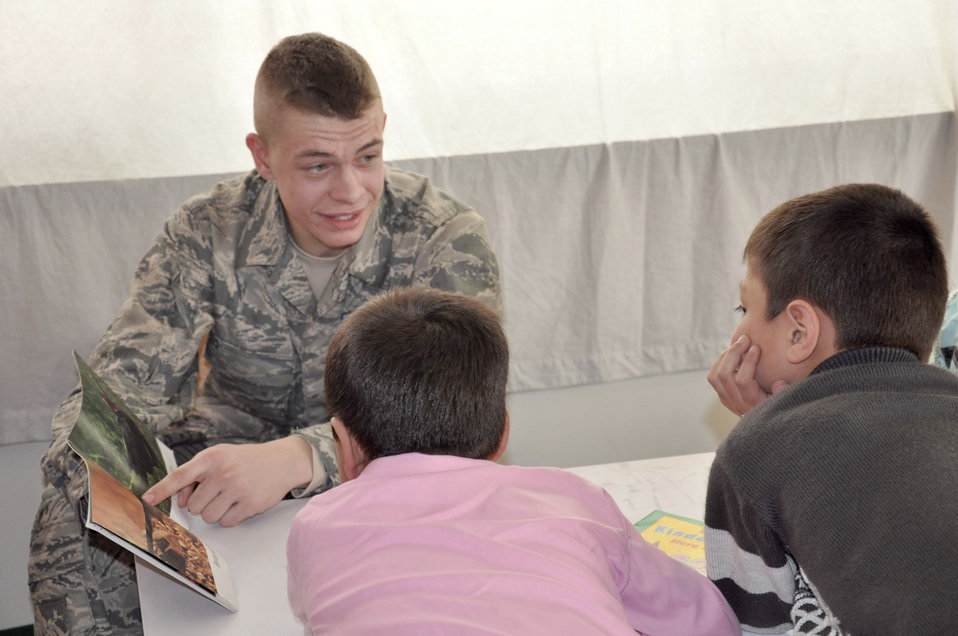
NTM-A members participate in reading program in Kabul school

Airman Nicholas Johnson reads a book to children during a community outreach event March 15, 2011, at a school in Kabul, Afghanistan. Airman Johnson is a patrolman assigned to the NATO Training Mission-Afghanistan. NTM-A members have hosted the reading program for the last six months and servicemembers from different nations have participated in the program every few weeks.